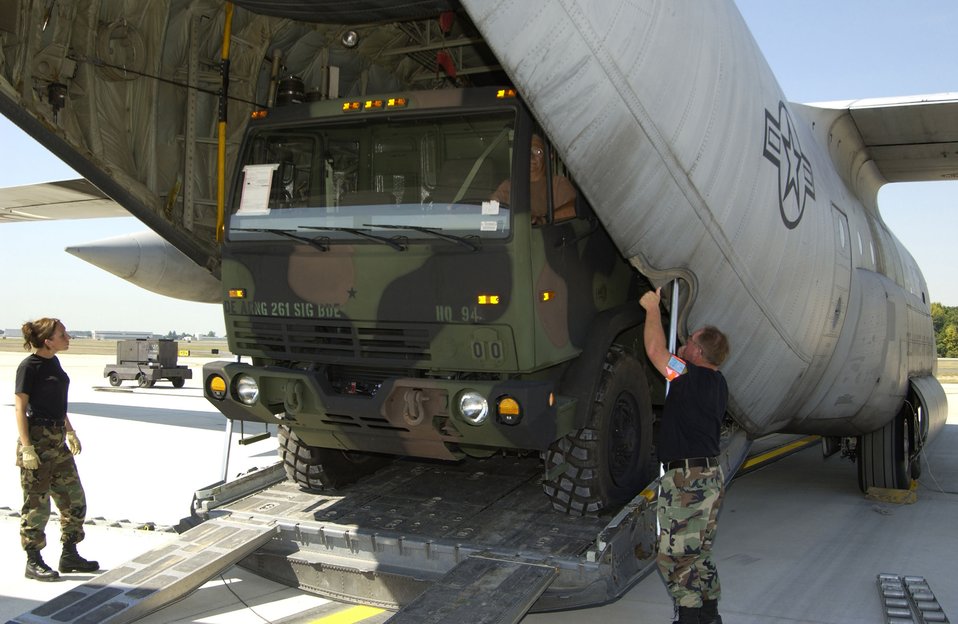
Tactical vehicle

NEW CASTLE COUNTY AIRPORT, Del. -- Senior Master Sgt. Michael Forsyth and Airman 1st Class Jennifer Quigg, load an M-1083 Tactical Vehicle onto a C-130 Hercules for deployment to New Orleans in support of Hurricane Katrina relief efforts. They are assigned to the 166th Aerial Port Flight with the Delaware Air National Guard.